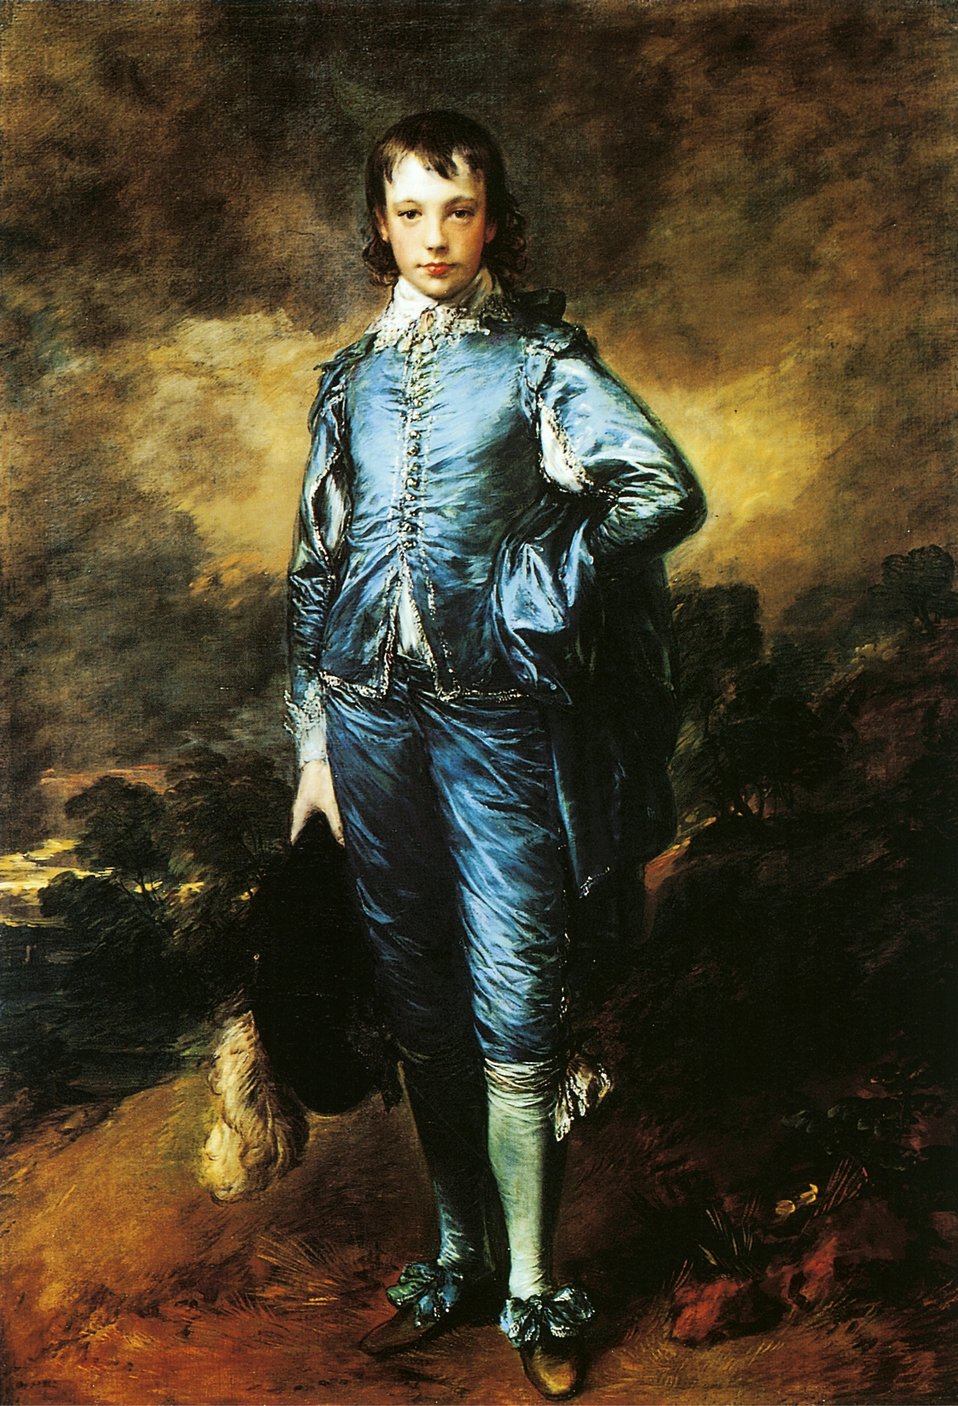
Thomas Gainsborough - The Blue Boy (1770)